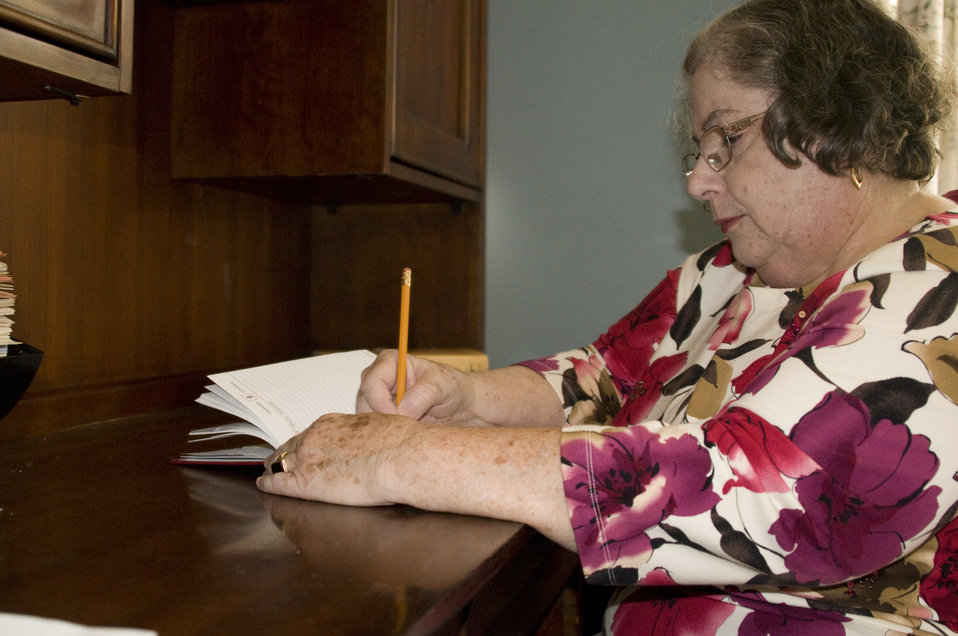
Seated at her in-home desk after having picked up her mail from her street side mailbox, this woman, who is a rheumatoid arthritis patient, was making notations in what appeared to be a daily diary. Living with arthritis does not necessarily mean existing in a non-functional state.Treatment